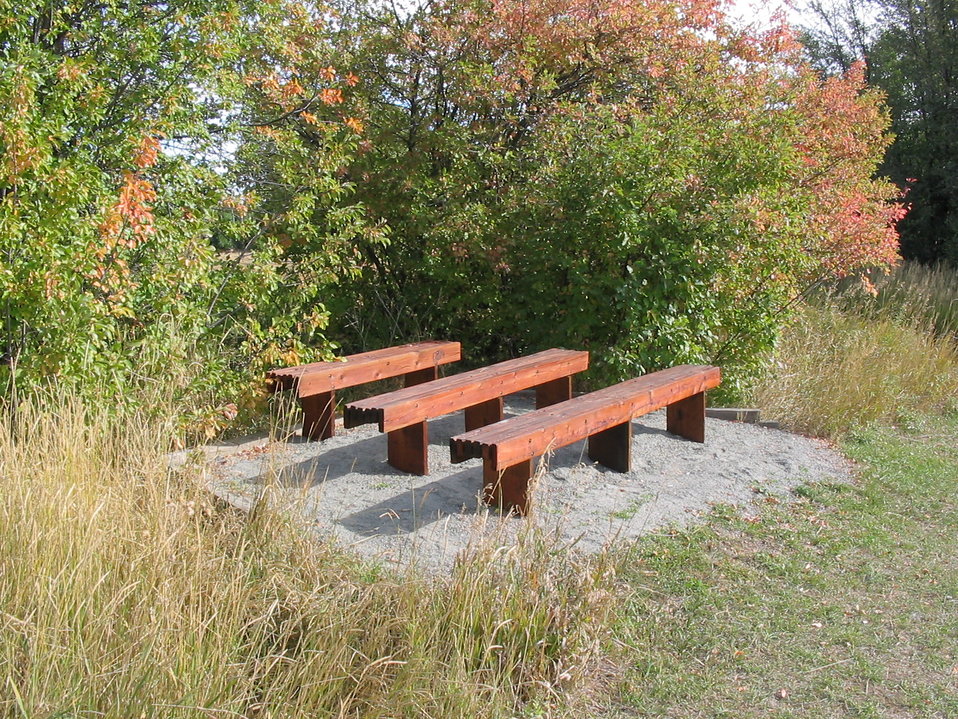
Benches